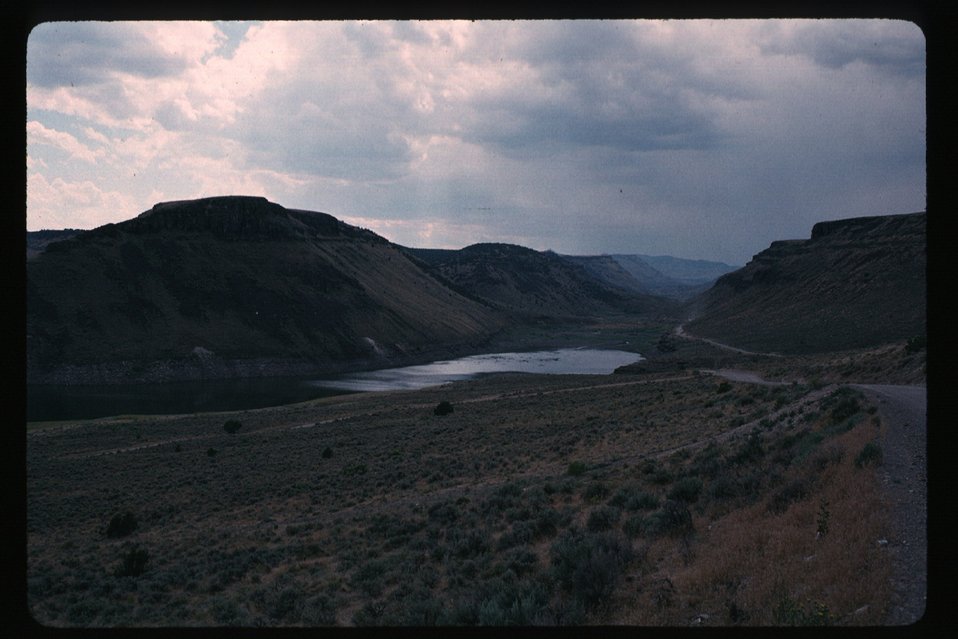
Oakley Reservoir Recreation Burley Field Office USRD Upper Snake River District